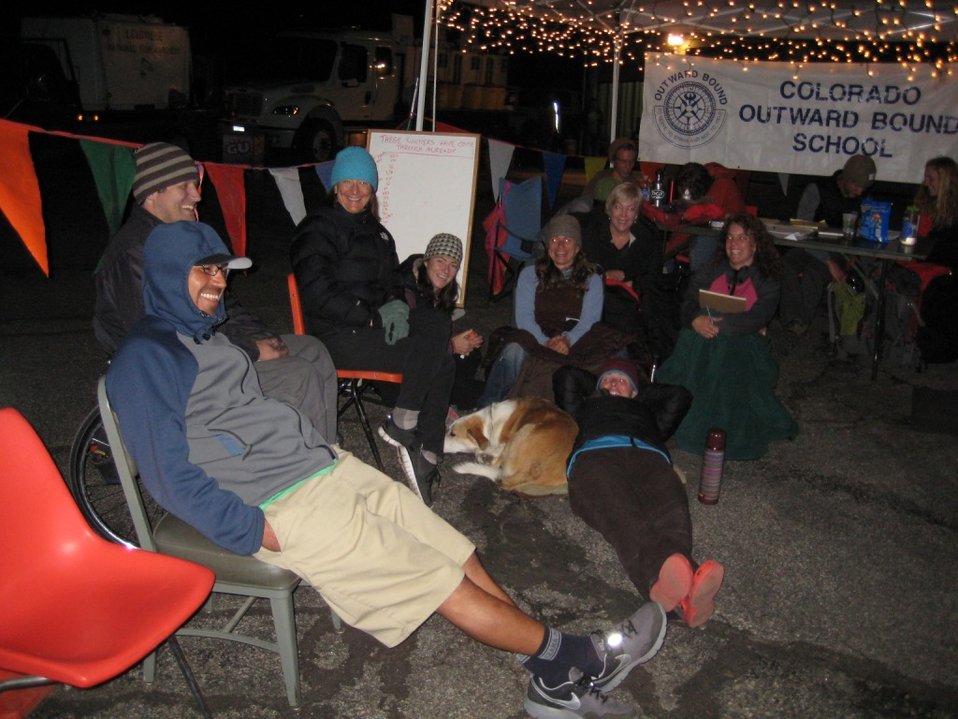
Outward Bound volunteers at timing tent

Outward Bound partnered with Leadville National Fish Hatchery to work the event. Volunteers sit at the timing tent at 2:00 a.m., waiting for the last runners to come in.